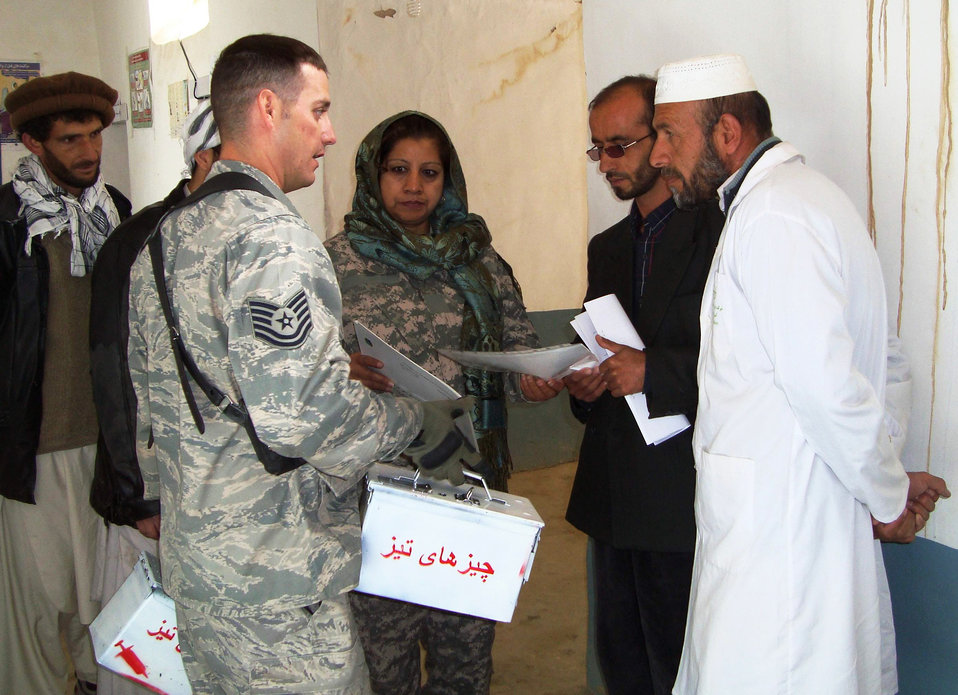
Panjshir PRT medics improve medical sanitation

Tech. Sgt. James Bailey provides Pharmacist Mohammad Yagub (right) and Ghulam Maiudin, a vaccinator, with containers to properly dispose of needles and other biohazardous materials during a visit to the Peshgor Clinic in Khenj District, Afghanistan. Sergeant Bailey is a Panjshir Provincial Reconstruction Team medic.